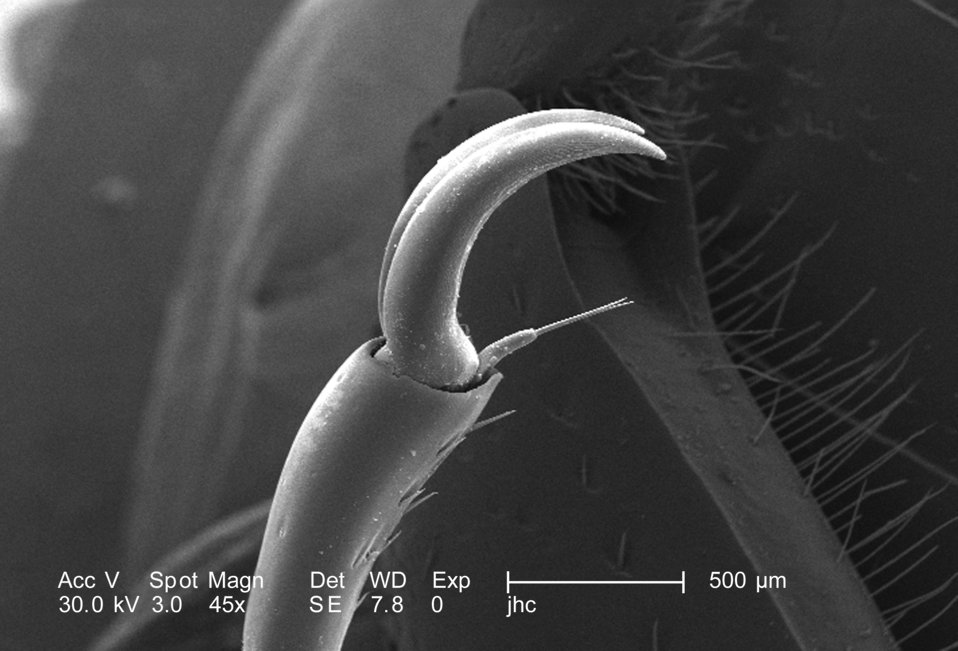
At a low magnification of only 45X, this scanning electron micrograph (SEM) depicted some of the morphologic exoskeletal features located at the distal end of an adult 'figeater' beetle's, Cotinis mutabilis leg. Depicted here was the claw-like tip of the insect's 5th tarsomere, as well as its accompanying empodium. This appendicular configuration affords the beetle a secure grasp of objects within its environmental domain, such as foliage or food. See PHIL 9944, 9945, 9947, 9948, and 9949 for additional views of these exoskeletal features.